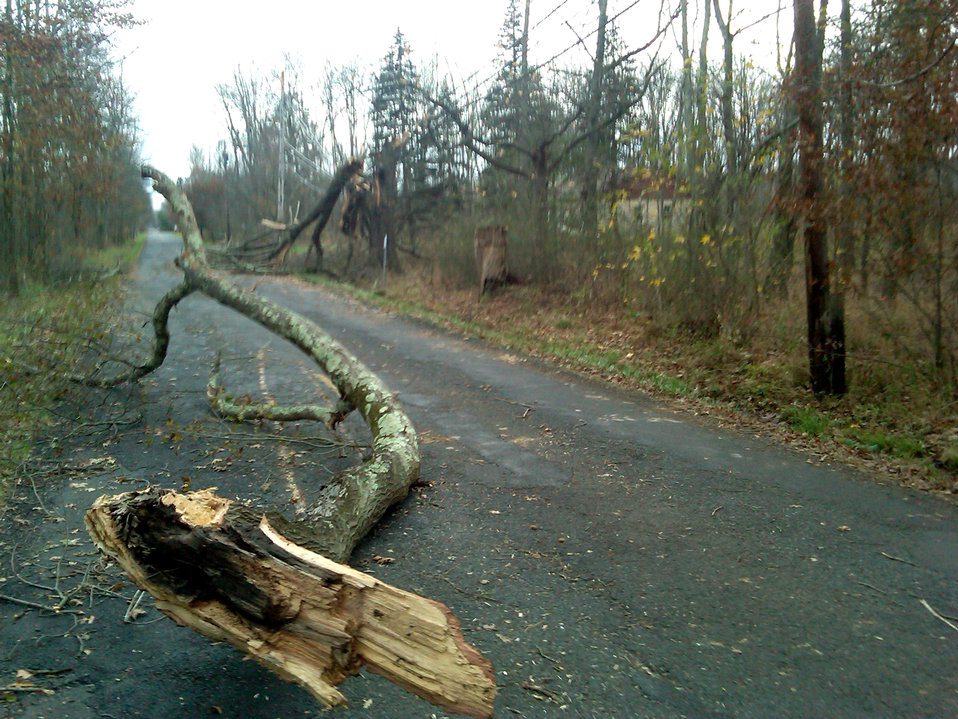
Hurricane Sandy caused damage at Great Swamp National Wildlife Refuge (NJ)

Downed tree at the refuge.